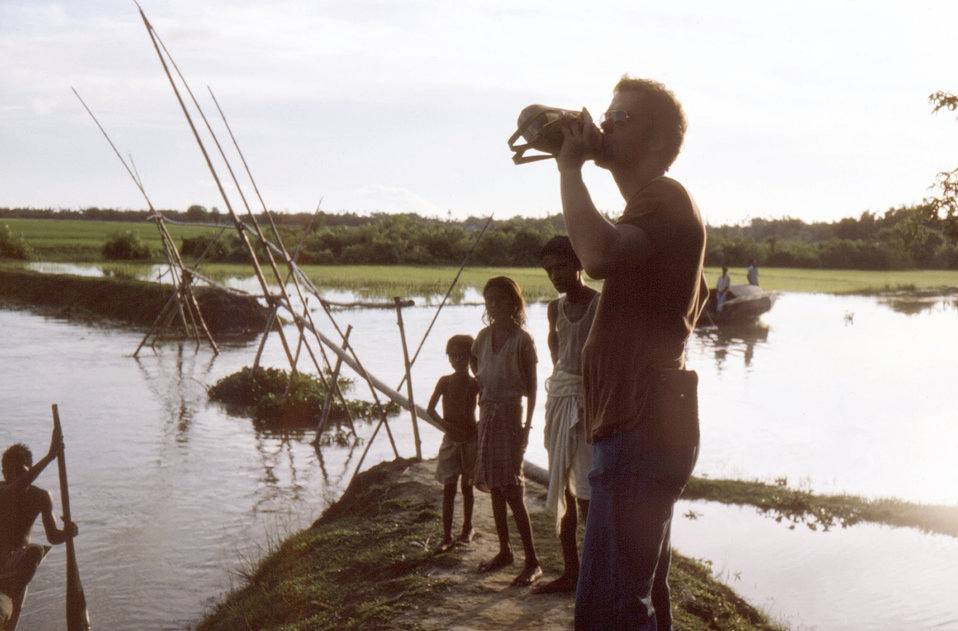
Depicted in this image, was Dr. Patrice Engelberts from Switzerland, in the Sylet District of north-eastern Bangladesh, standing in front of what was a typical bamboo bridge. Dr. Engelberts was one of the members of the smallpox eradication team on a 3-day field training program in the process of conducting a national smallpox search.